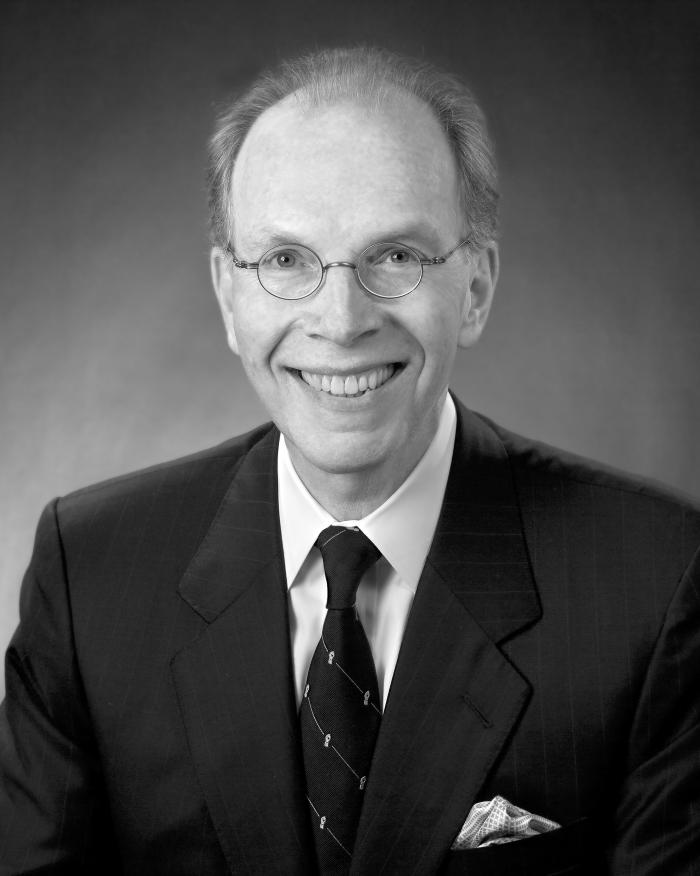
This is Jeff Koplan, M.D., M.P.H., former Centers for Disease Control and Prevention Director from 1998 - 2002, and Epidemic Intelligence Service Officer (EIS), class of '72.